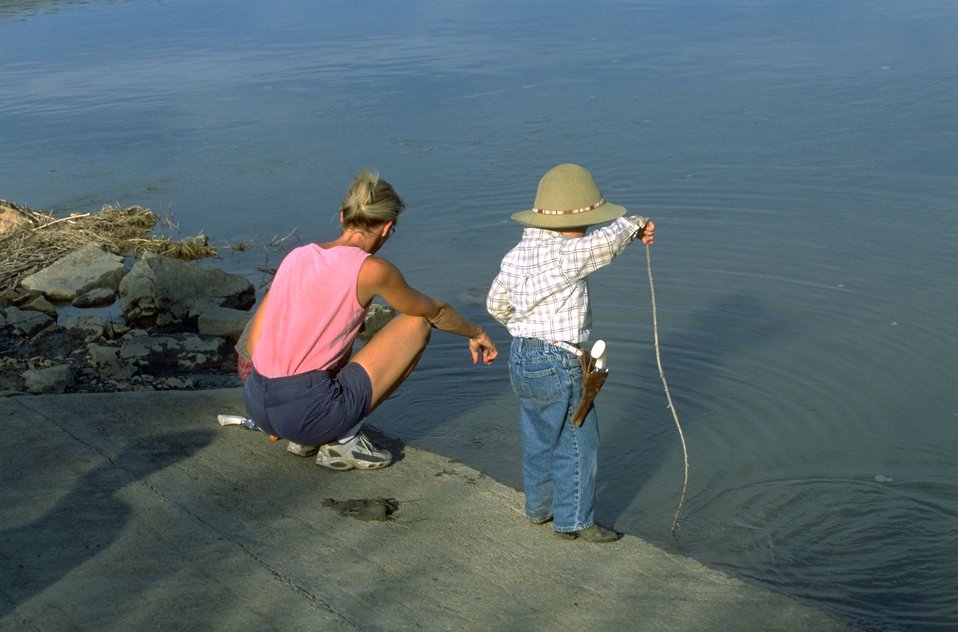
Enjoying the Upper Missouri River